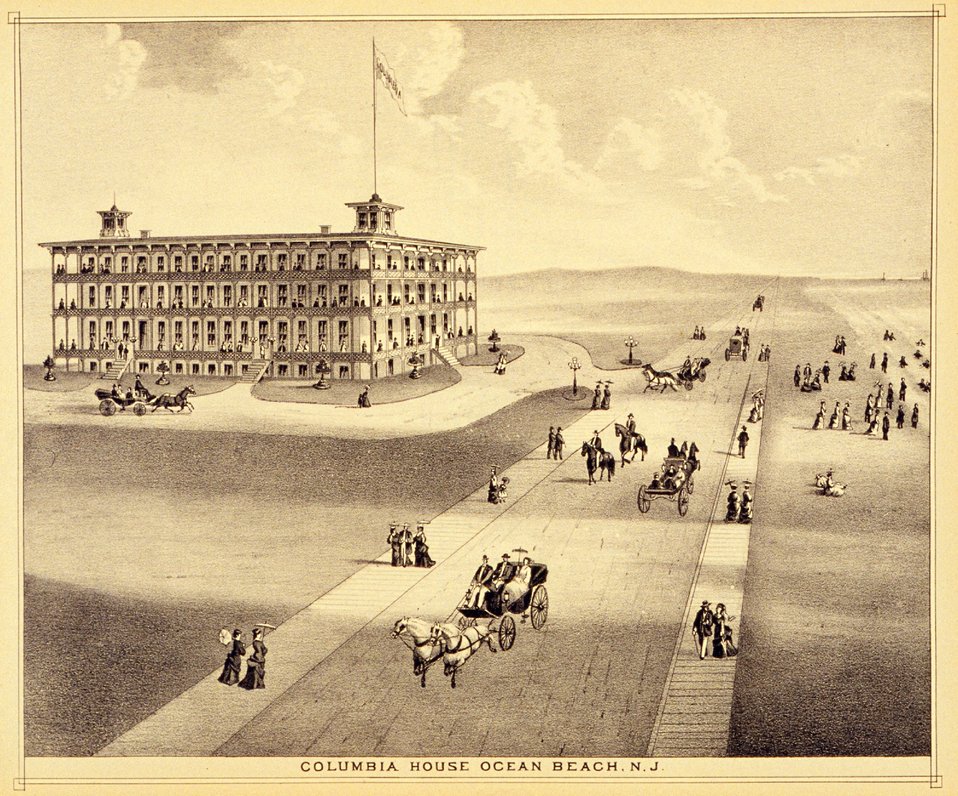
Columbia House, Ocean Beach, New Jersey. P. 211. 'Historical and Biographical Atlas of the New Jersey Coast,' by T. F. Rose, 1878.